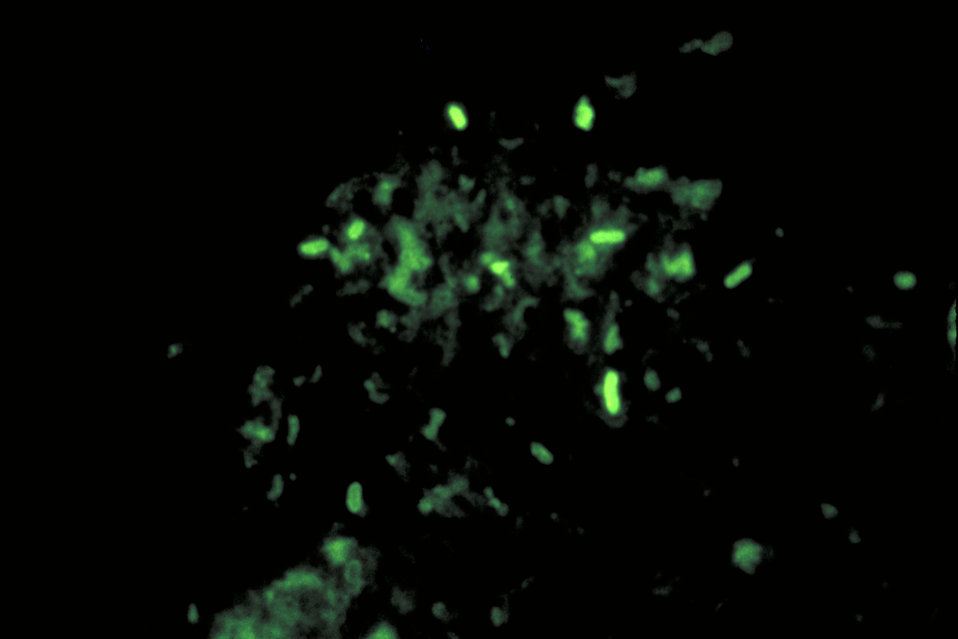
Salmonella bacteria in tetrathionate enrichment broth stained using direct FA staining technique.